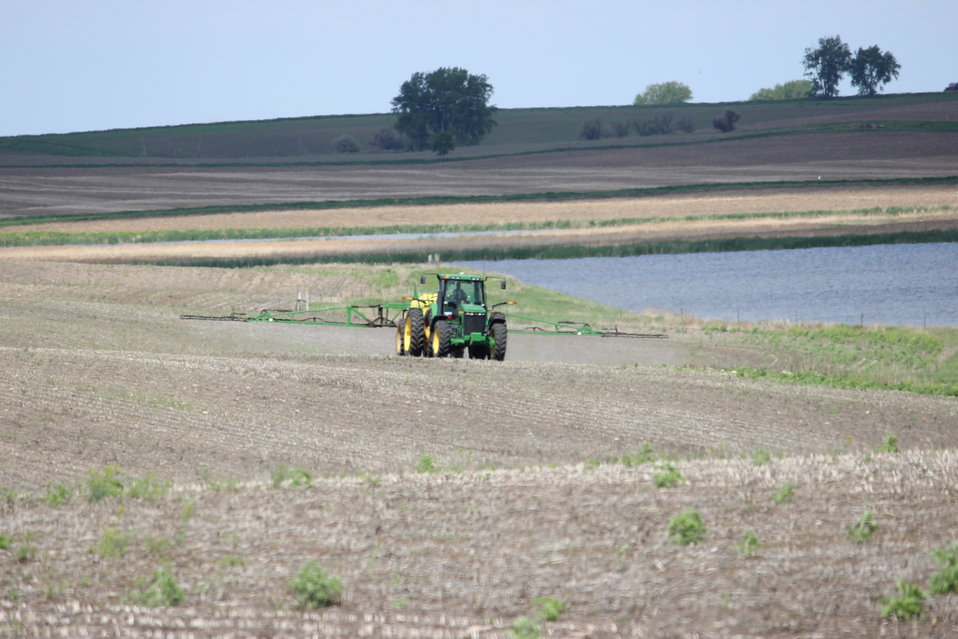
Herbicide Application

A Kulm WMD Biotech broadcasts herbicide prior to a native prairie reseeding. This will help prevent the 'weeds' from getting a jump on, and shading out the native species that will be seeded here shortly afterward. This particular tract of the Carlson Waterfowl Production Area in LaMoure County, ND has been farmed by a local cooperator for the past three years. Farming a previously-broken tract of land helps to get noxious weeds under control and gives good seed bed preparation for the re-establishment of native species. These new seedings will provide more diverse cover and structure for waterfowl and other grassland-nesting bird species.